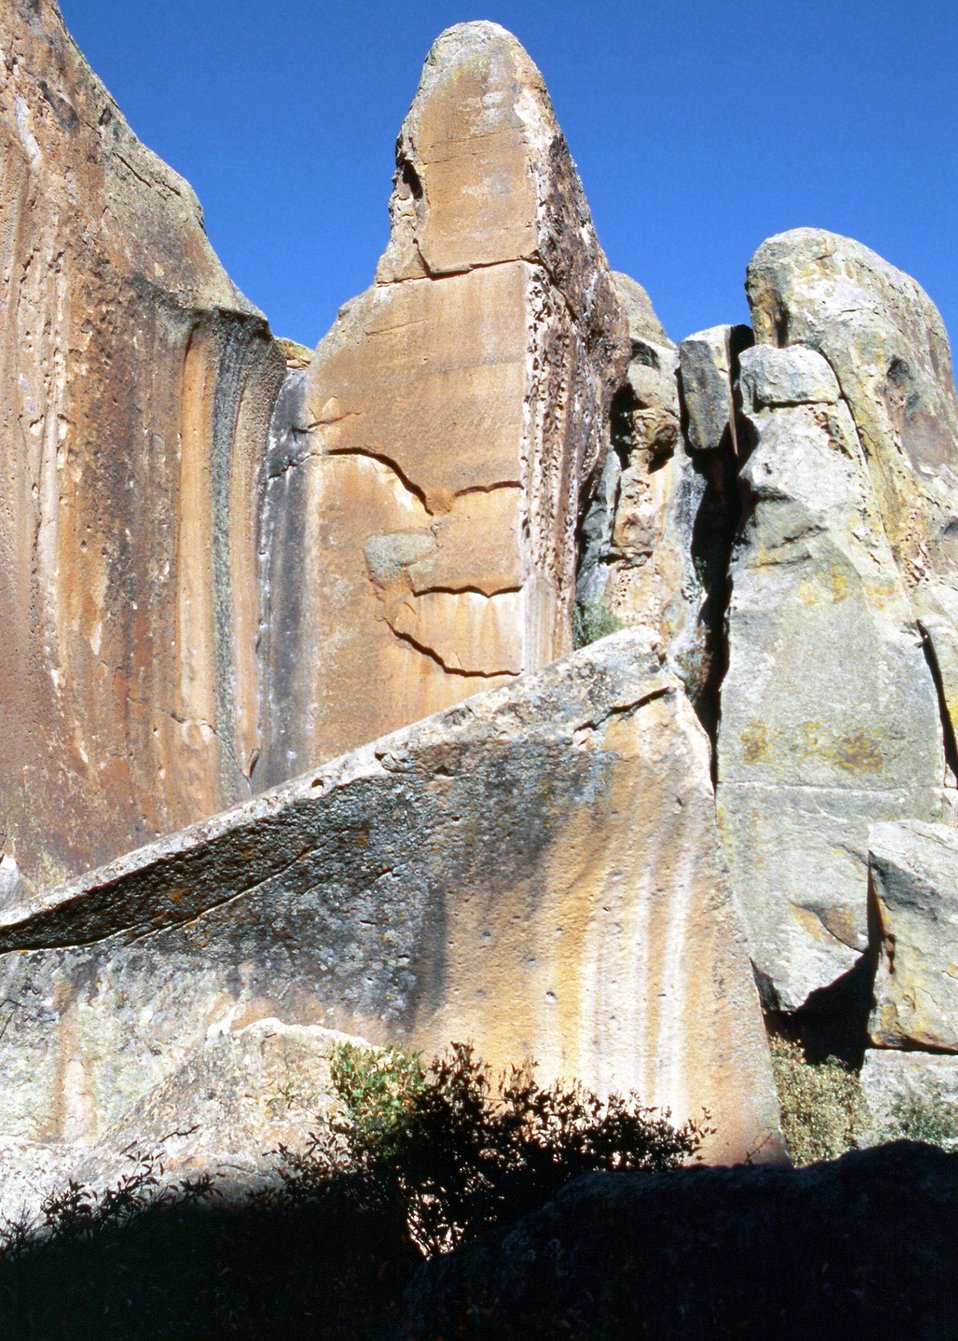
Climbing Area